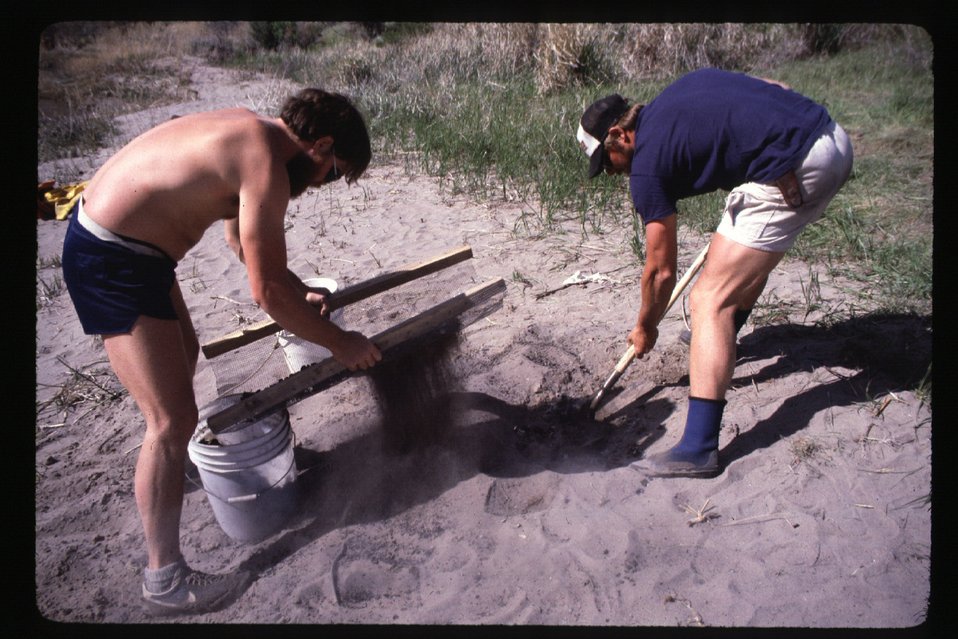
Cleaning up fire rings Owyhee River Owyhee Field Office LSRD Lower Snake River District